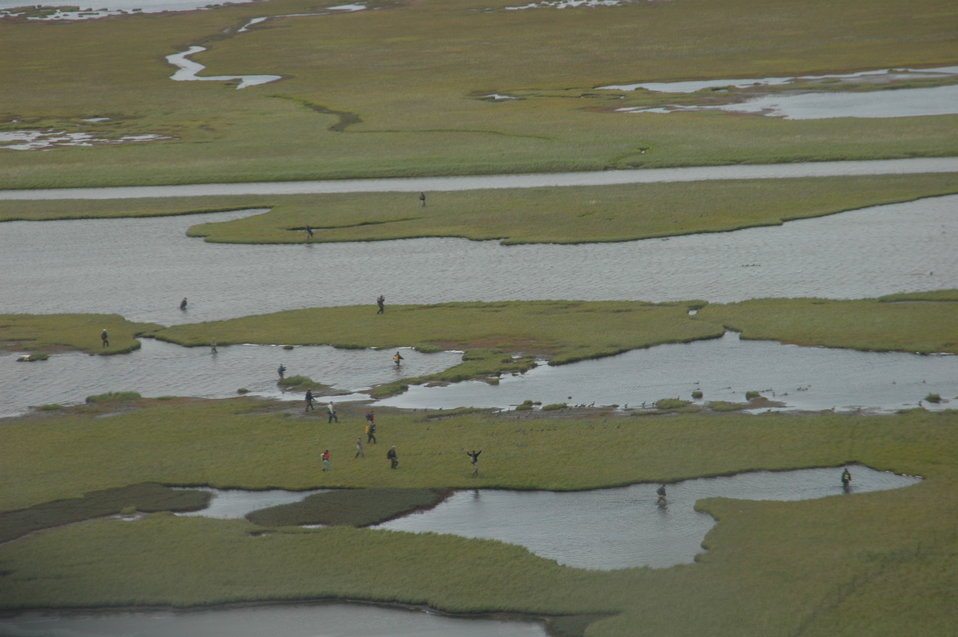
Rounding up Geese

A group of biologists, volunteers, biotechs, refuge staff, migratory bird management staff, etc joined forces to band and collar cackling cackling geese on the Yukon-Kuskokwim Delta.

One of the operations involved pushing family flocks into a large catch pen.

USFWS Yukon Delta NWR